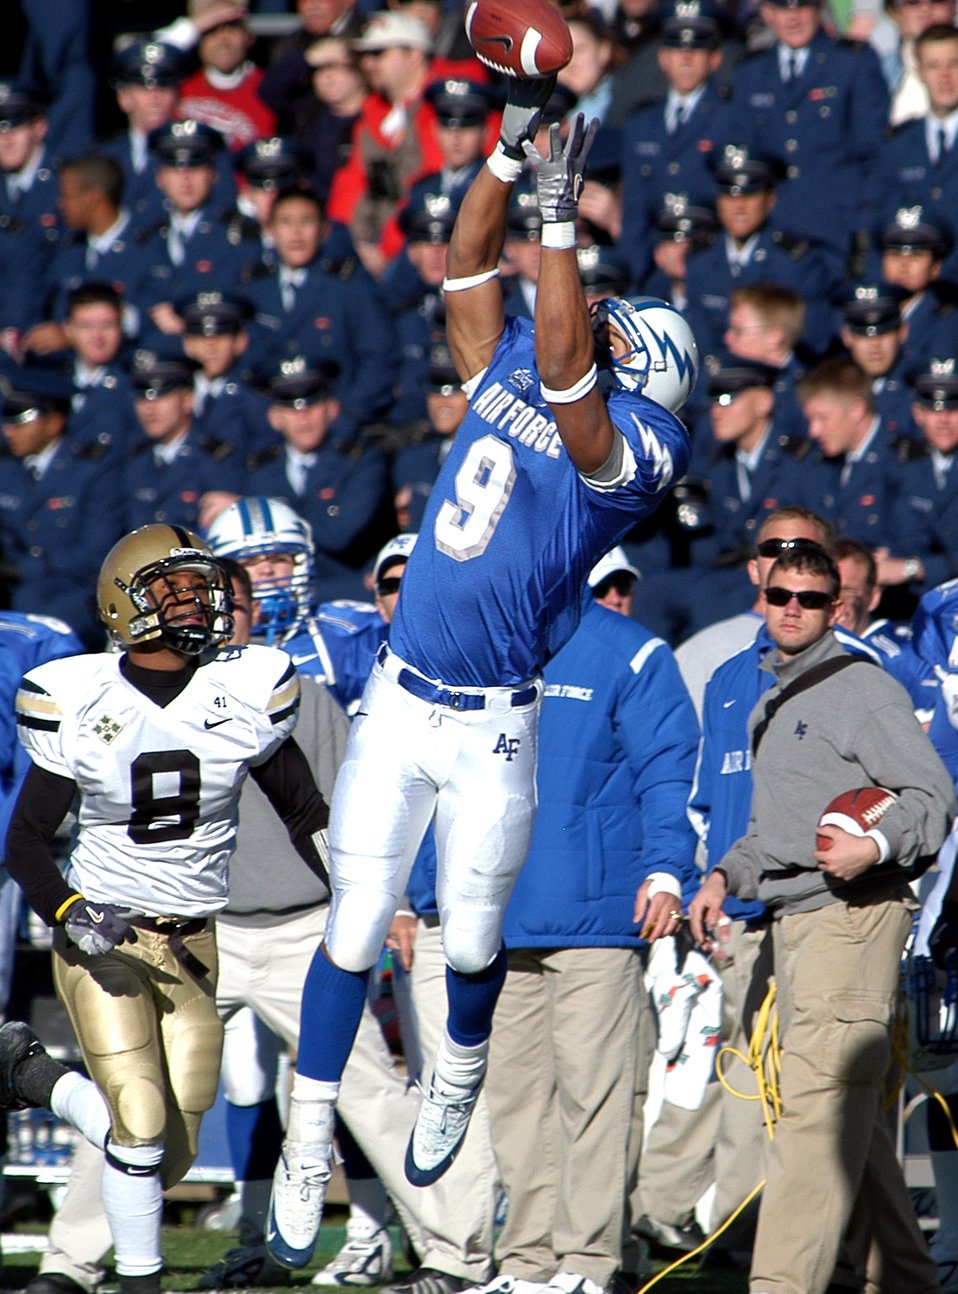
Army vs Air Force

U.S. AIR FORCE ACADEMY, Colo. (AFPN) -- Falcon senior wide receiver Jason Brown uses his 6-foot 4-inch frame to reach for a pass as Army defensive back Darren Newson looks on.